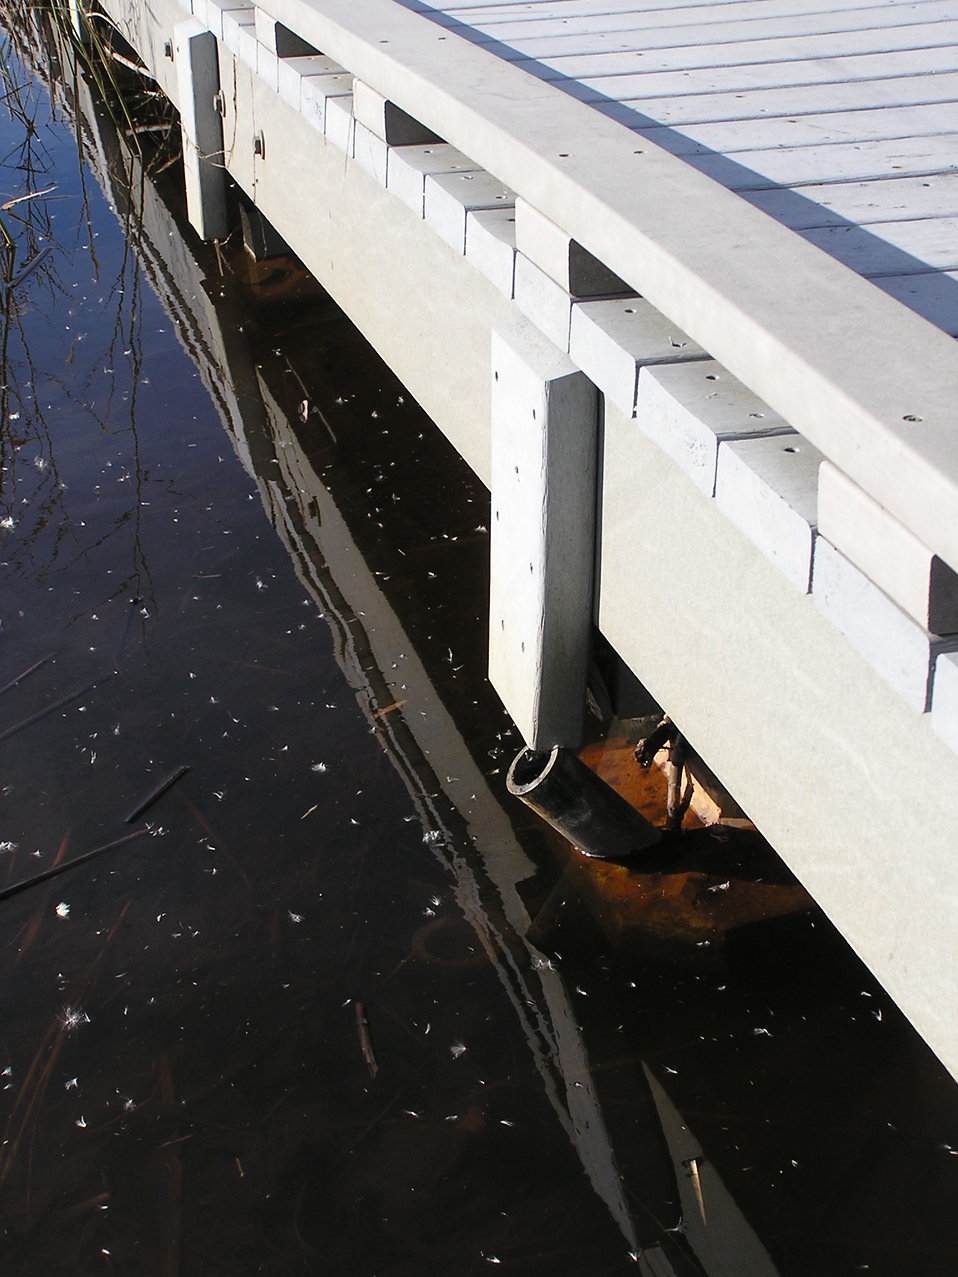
Hurricane Sandy damaged Cape May National Wildlife Refuge (NJ)

Support leg separated from underside of Marsh Trail boardwalk at Cape May National Wildlife Refuge's Two Mle Beach Unit.